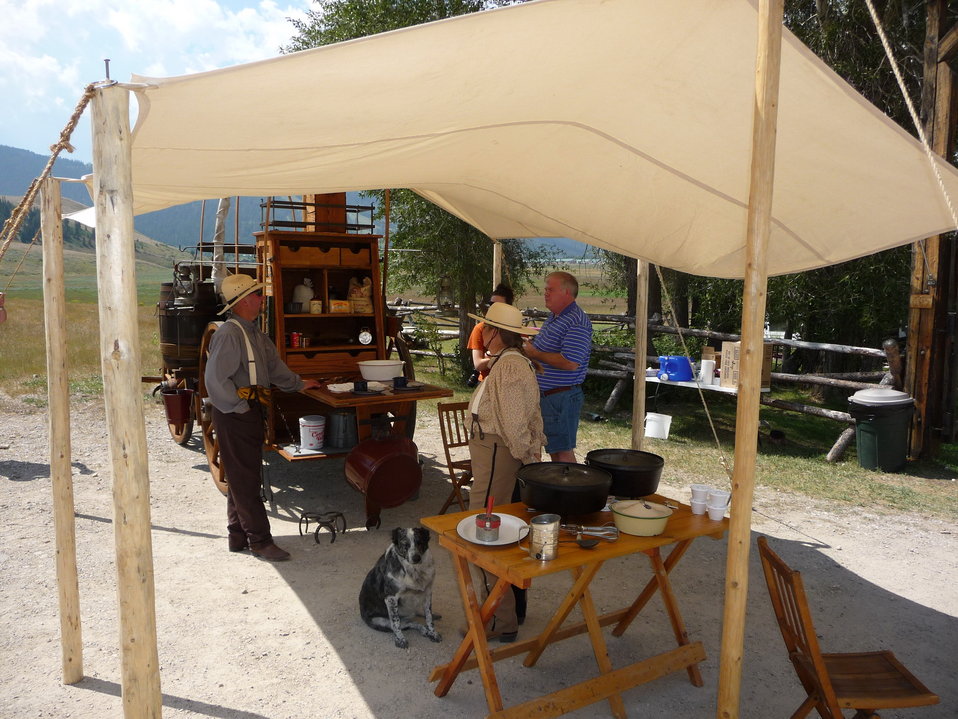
A Home Cooked Meal on the Range

Joe and Vicki Jones of Western Range Catering visited with guests during a chuckwagon cooking demonstration at the National Elk Refuge's Historic Miller House, one of the many events held during the refuge's centennial weekend.

Credit: USFWS / Chuck Mulcahy, National Elk Refuge volunteer